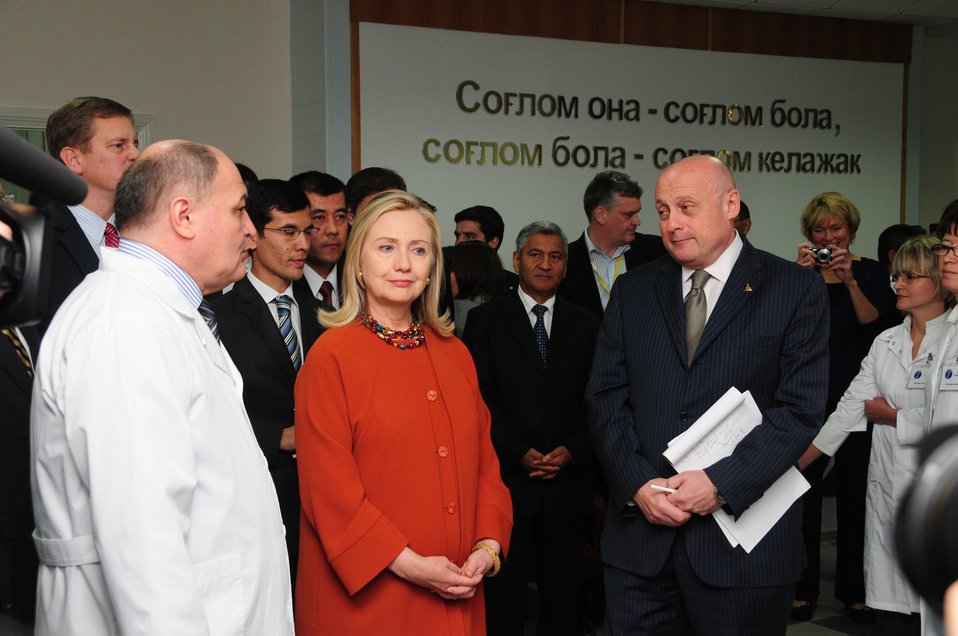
Secretary Clinton Listens to Dr. Dilmurod

U.S. Secretary of State Hillary Rodham Clinton listens to Dr. Dilmurod describe the Women’s Wellness Center in Tashkent, Uzbekistan, on October 23, 2011.